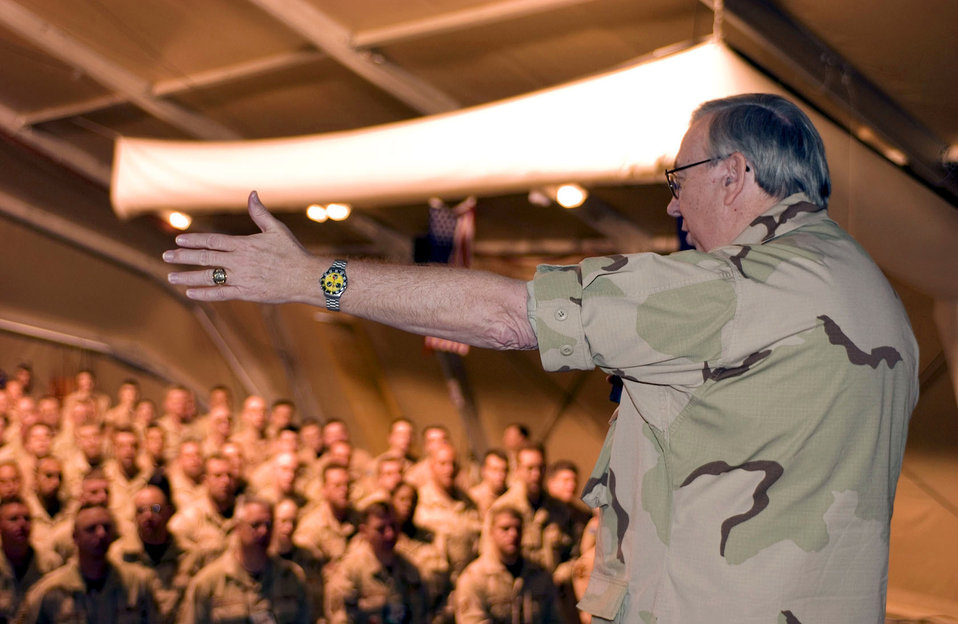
Roche visits Manas

MANAS AIR BASE, Kyrgyzstan -- Secretary of the Air Force Dr. James G. Roche speaks to people here April 16. It was the secretary's first trip to the primary strategic airlift hub for operations in and around Afghanistan. The base's Airmen provide tactical-airlift and aerial-refueling support for Operation Enduring Freedom.